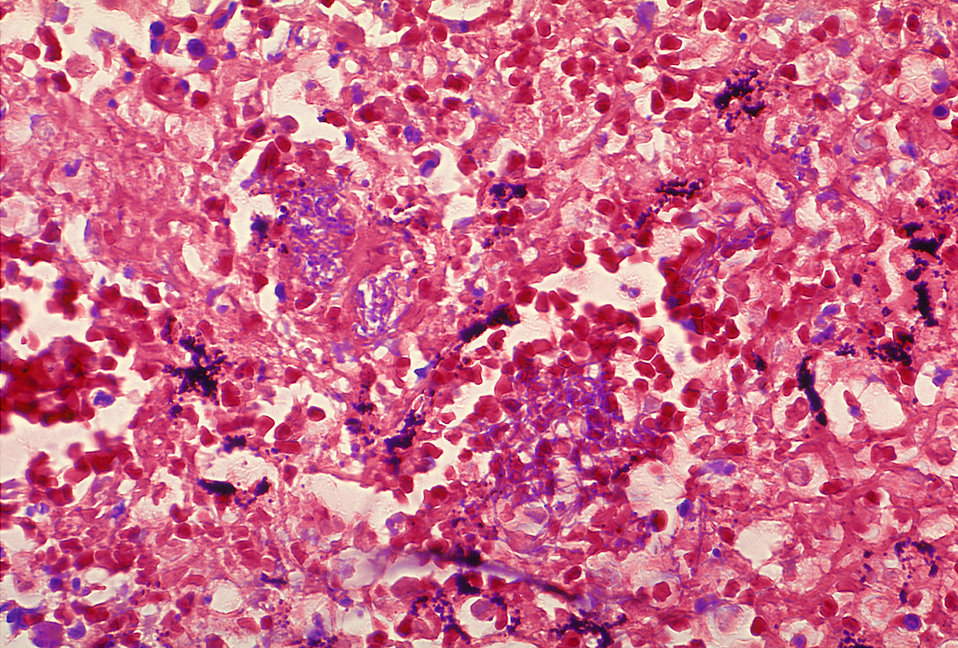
Histopathology of mediastinal lymph node in fatal human anthrax.